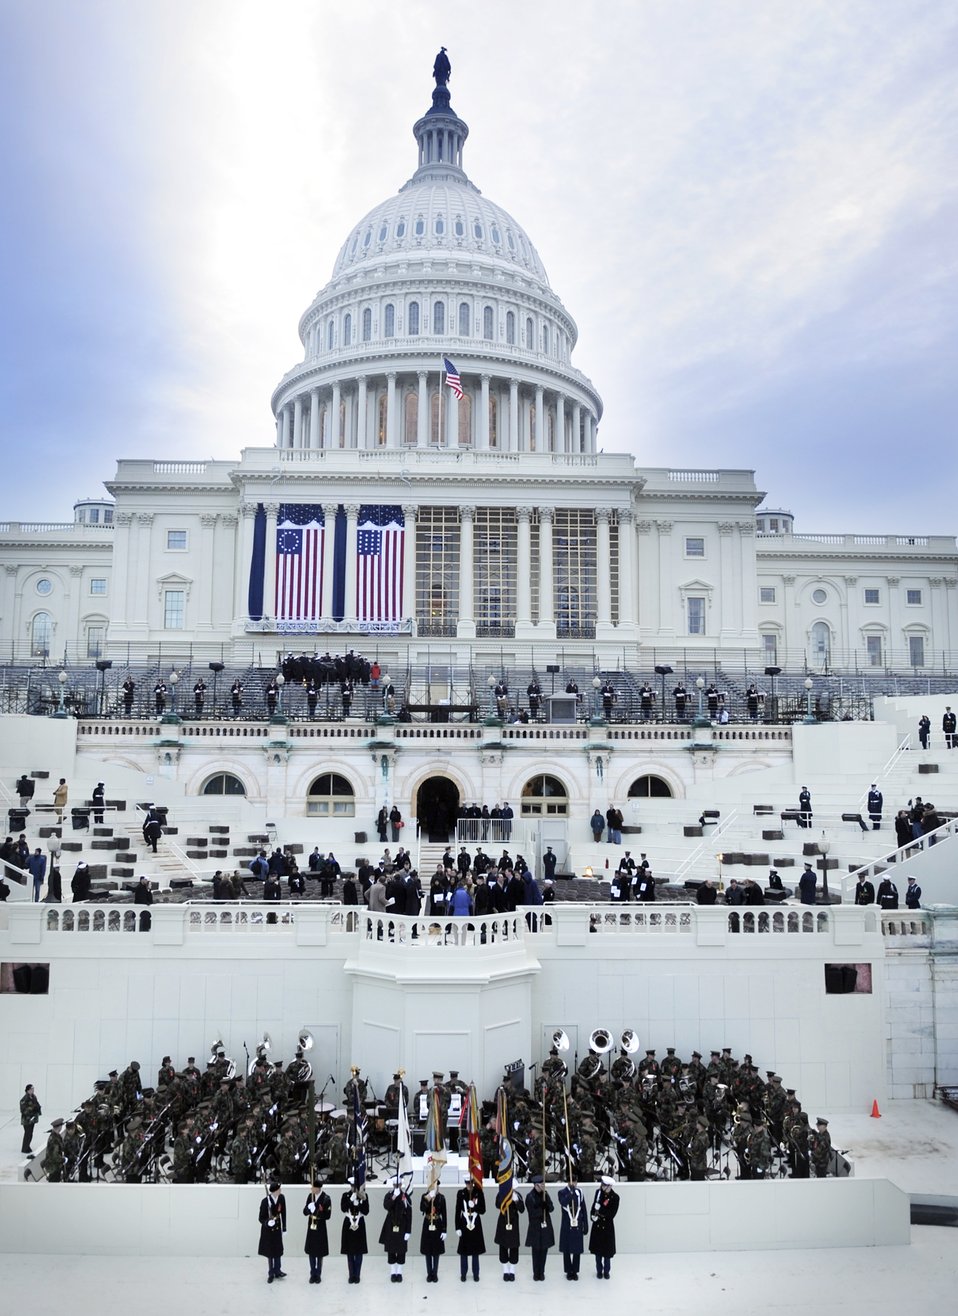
Chilly inauguration preparations

The Capitol Dome provides the background as U.S. servicemembers prepare for the 56th presidential inauguration rehearsal Jan. 11, 2009, in Washington, D.C. More than 5,000 men and women in uniform are providing military ceremonial support to the inauguration.